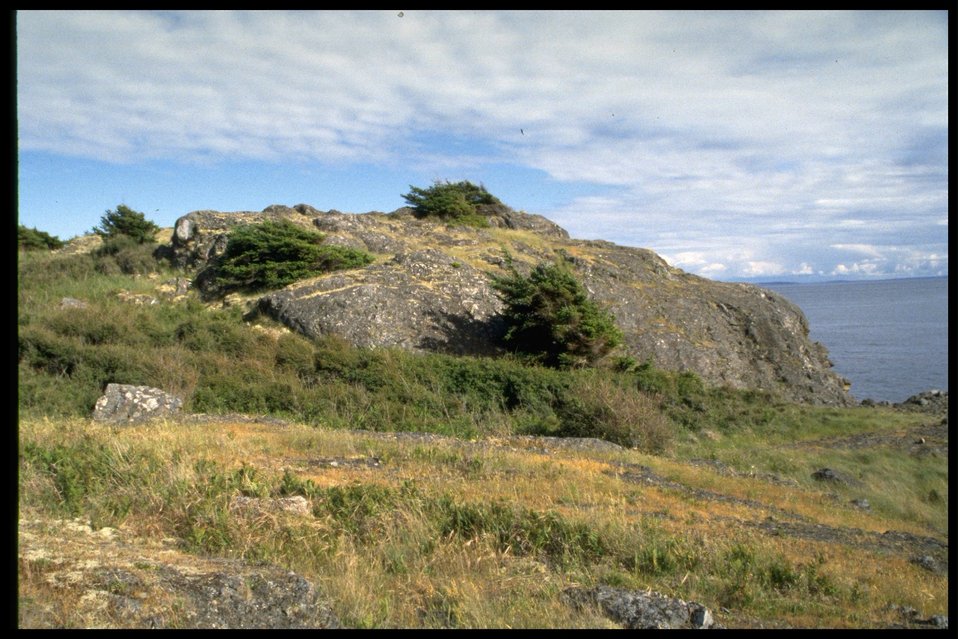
Long shot of Rock Point at Point Colville.